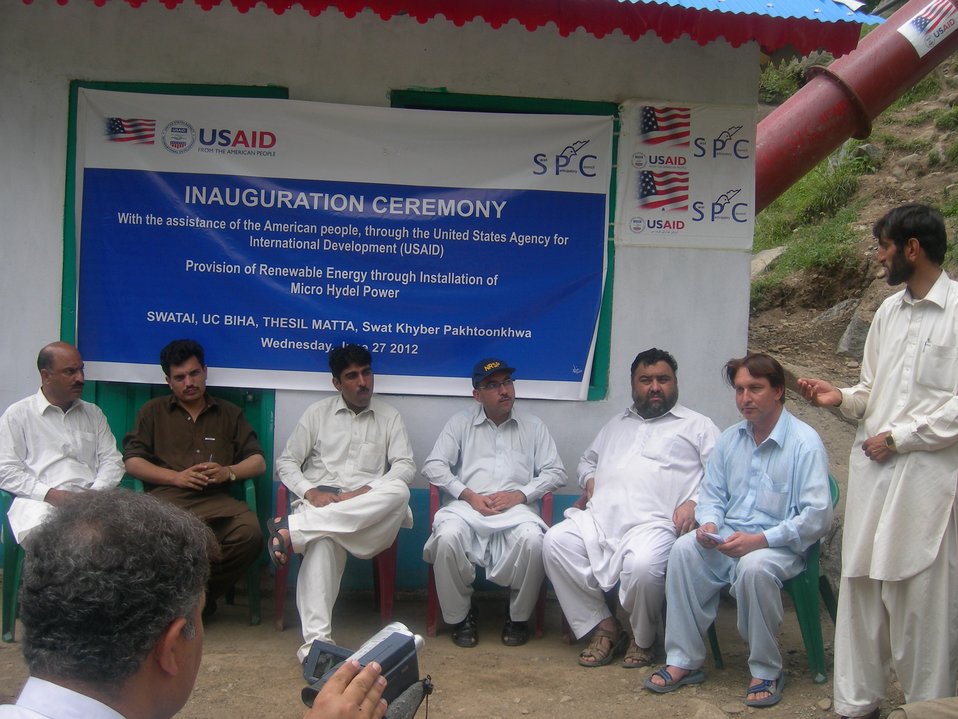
INAUGURATION CEREMONY

A new wave of energy has swept a remote village of Matta Tehsil. Children are excited, elders relieved. Electricity had lit their dark houses after over six decades of independence and connected them to the modern world.
“We can now watch cartoons on the TV just like all the other children,” said an excited child during the inauguration of a micro-hydropower station on Saturday.
The community-based power station, which will supply electricity to about 110 households in Swatai village, has been installed with the assistance of Small Grants Ambassador Fund Program of the USAID in collaboration with the Swat Participatory Council (SPC).